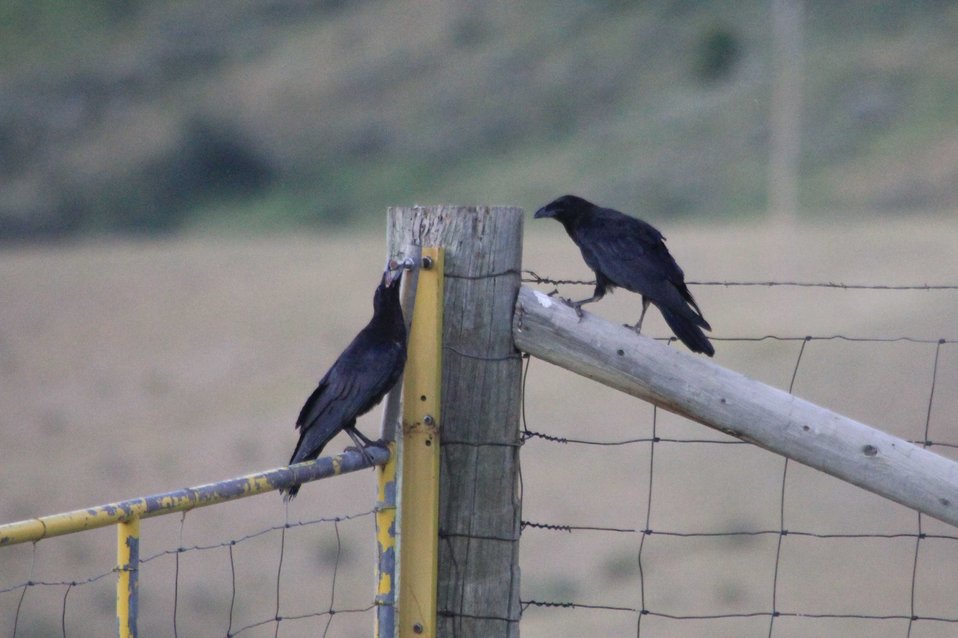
Theft of Government Property?

An inquisitive raven tugs on an attractive piece of metal from a gate on the National Elk Refuge.

Credit: USFWS / Ann Hough, National Elk Refuge volunteer